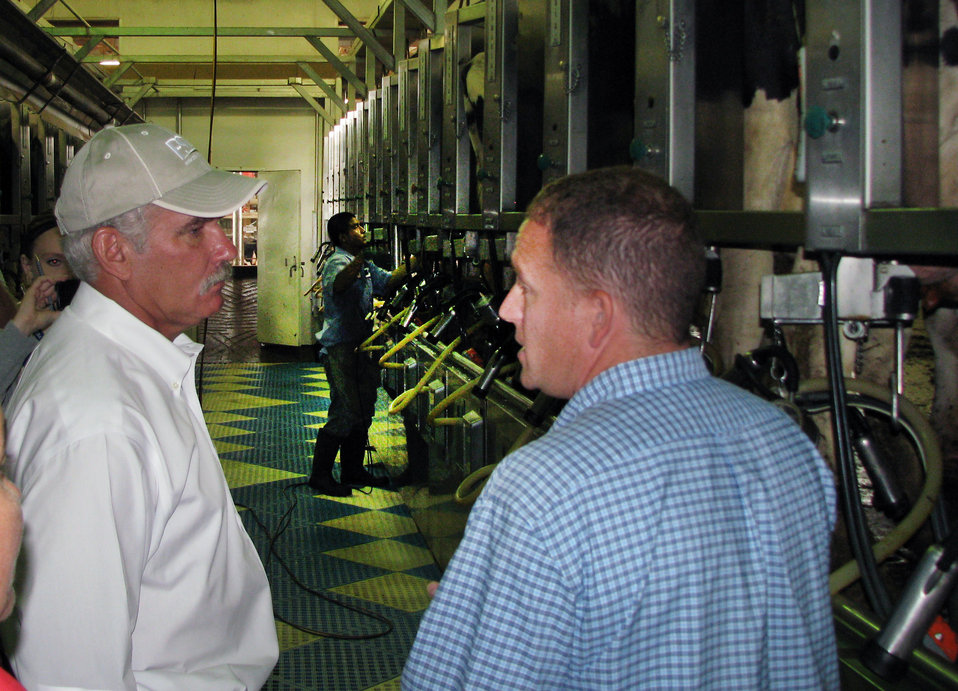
Agriculture Under Secretary for Farm and Foreign Agriculture Service (FFAS) Michael Scuse (left) talks with dairy producer Joe Kelsey about the challenges to the diary industry caused by the drought in Whiteland, IN on Thursday, July 19, 2012. Agriculture Secretary Vilsack has instructed Agriculture subcabinet leaders to travel to affected drought areas to augment ongoing assistance from state-level U.S. Department of Agriculture (USDA) staff and provide guidance on USDA’s new, streamlined disaster process. The U.S. Drought Monitor currently reports that 61 percent of the continental United States is in a moderate to exceptional drought.